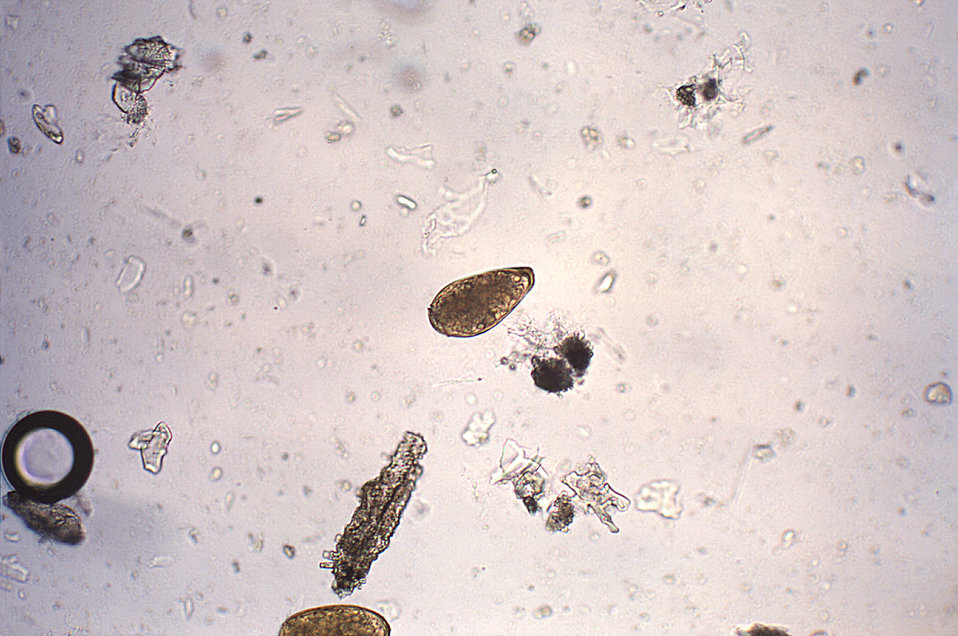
Magnified 100X, this photomicrograph, at its center, revealed some of the ultrastructural morphology of a trematode Paragonimus westermani egg. P. westermani eggs range from 80�m to 120�m long by 45�m to 70�m wide. They are yellow-brown, ovoid or elongate, with a thick shell, and often asymmetrical with one end slightly flattened. At the large end, the operculum is clearly visible. The opposite (abopercular) end is thickened. The eggs are unembryonated when passed in sputum or feces. There is another unidentified ovum at the bottom of the image.